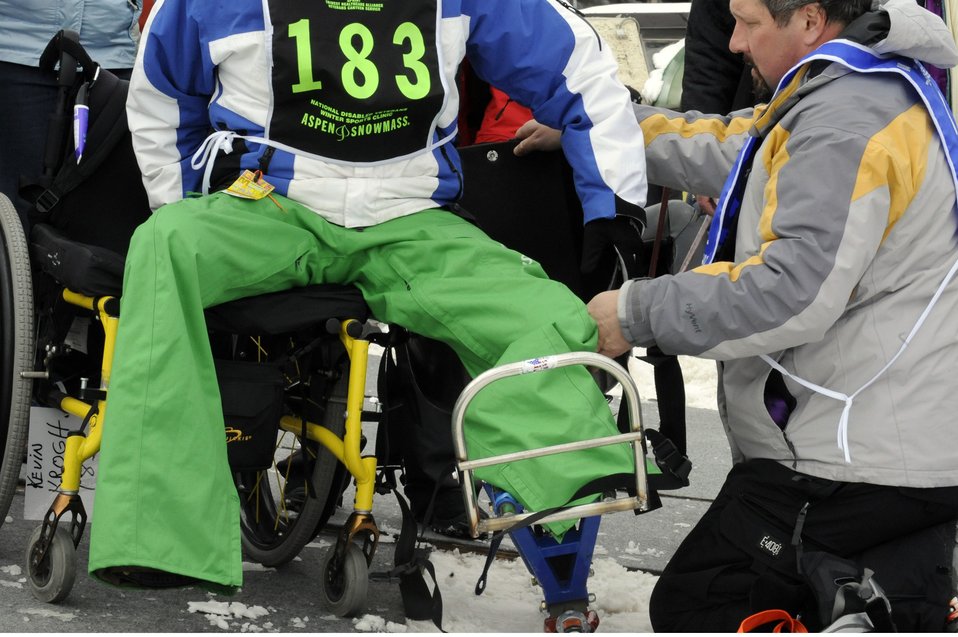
23rd National Disabled American Veterans Winter Sports Clinic

Mark Finken assists Senior Airman Kevin Krogh from his wheelchair to his mono-ski March 31 during the 23rd National Disabled American Veterans Winter Sports Clinic in Snowmass Village, Colo. Airman Krogh lost both legs in a major car accident in 2007 and this is his first year attending the sports clinic. Airman Krogh is assigned to Fort Sam Houston in San Antonio. Finken is a ski instructor for the sports clinic.